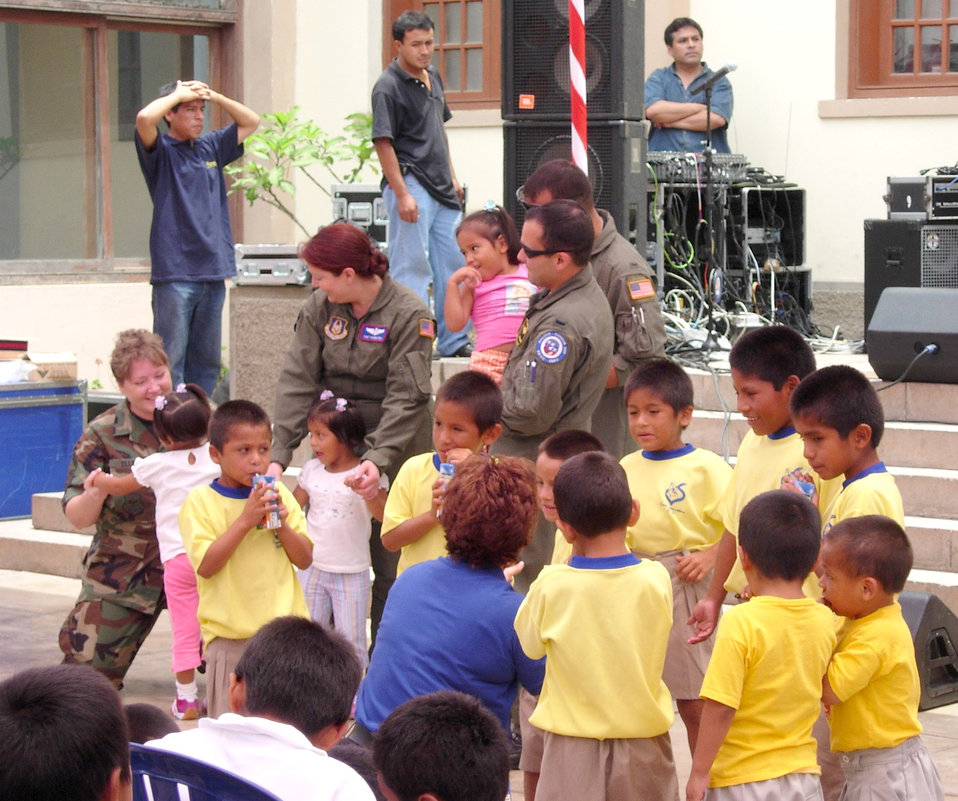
Airmen foster relations as ambassadors

Aircrew members visit with children at a local foster home Feb. 16 at Lima, Peru. Airmen in Peru wrapped up the joint exercise Falcon and Condor 2007 this week and are remaining there for the first joint air show with the Peruvian Air Force this weekend. The Peruvian air show will be the first of the year for aircraft from the 12th Air Force and Air Forces Southern. The joint exercise and air show directly supports U.S. Southern Command's engagement goals and furthers relations between allied nations.